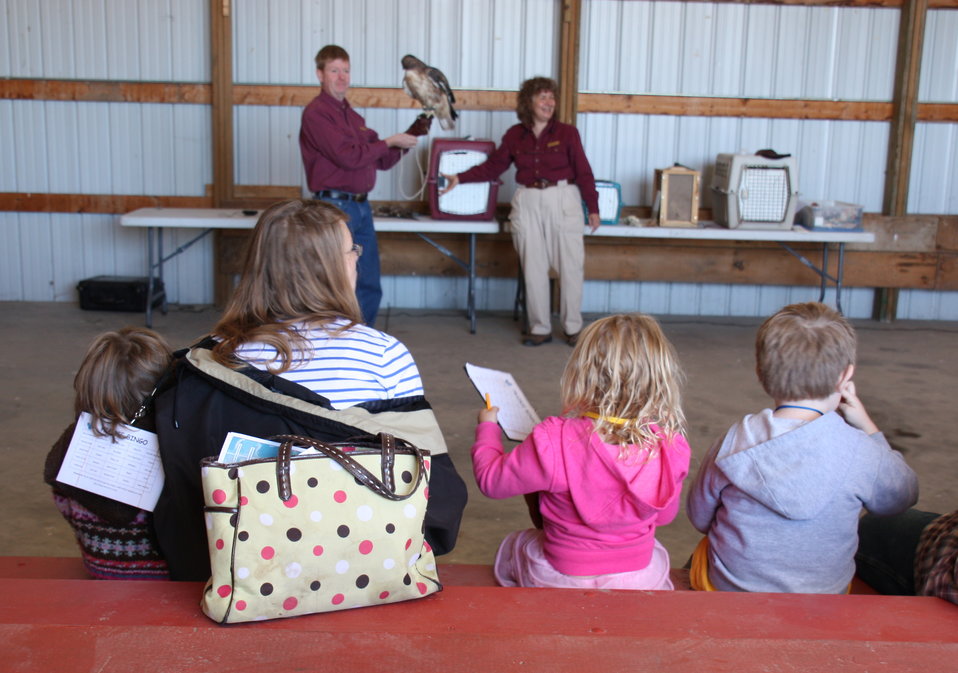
Prairie Fest 2012